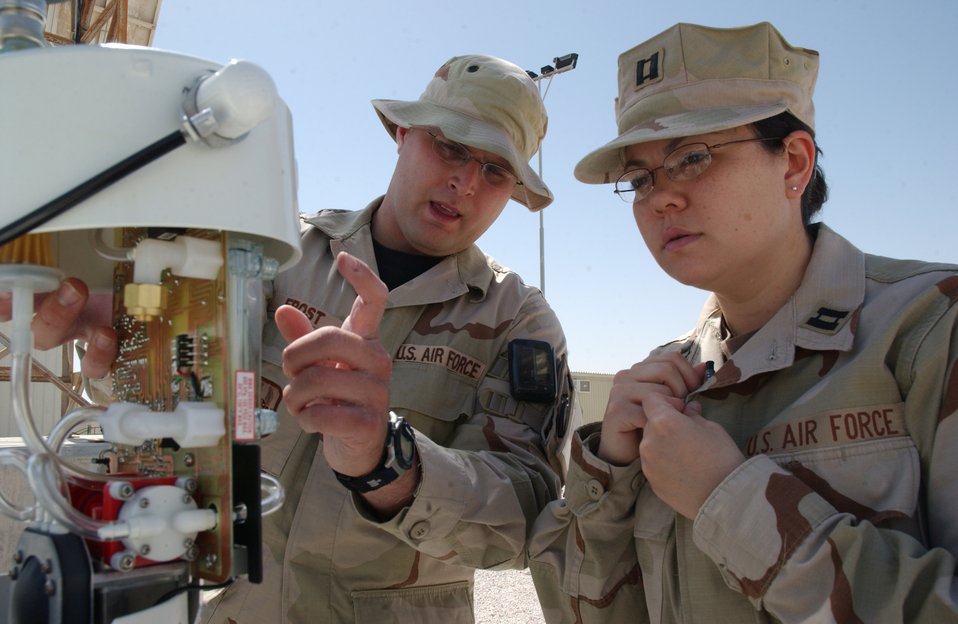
Air sampling

Senior Airman Chad Frost and Capt. Lara Henry take readings and adjust a minivol portable air sampler at a deployed location in Southwest Asia. The two work with the 379th Expeditionary Medical Group's bioengineering flight to monitor and collect samples of particulate matter. The information will be used to determine potential short- and long-term health effects of personnel deployed in the region.